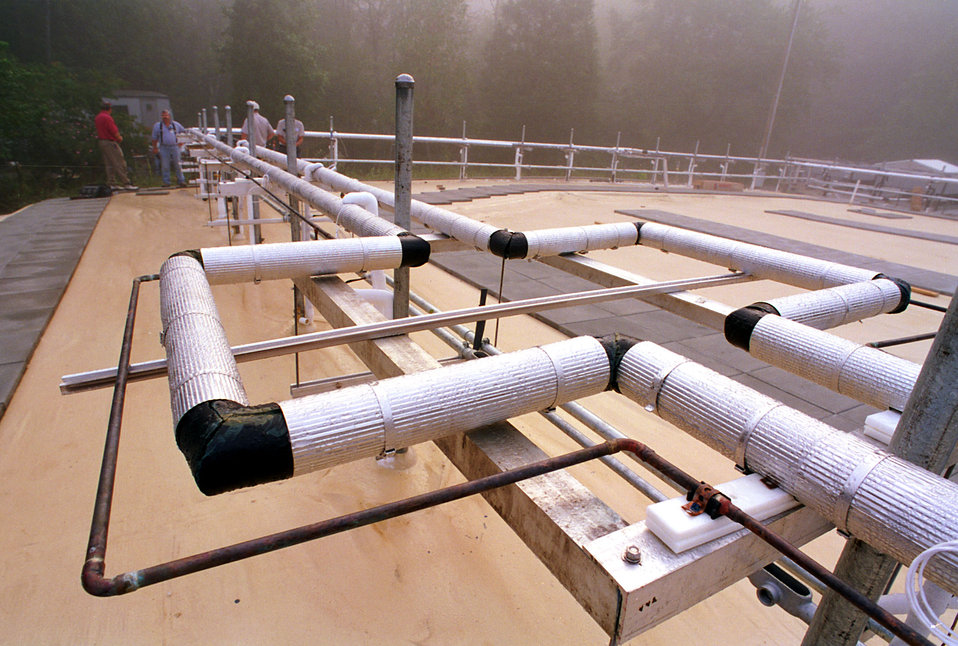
Cryogenics Barrier Demo Project at ORNL 1997

97-489-8 DOE photo Lynn Freeny 1997 Oak Ridge Tennessee